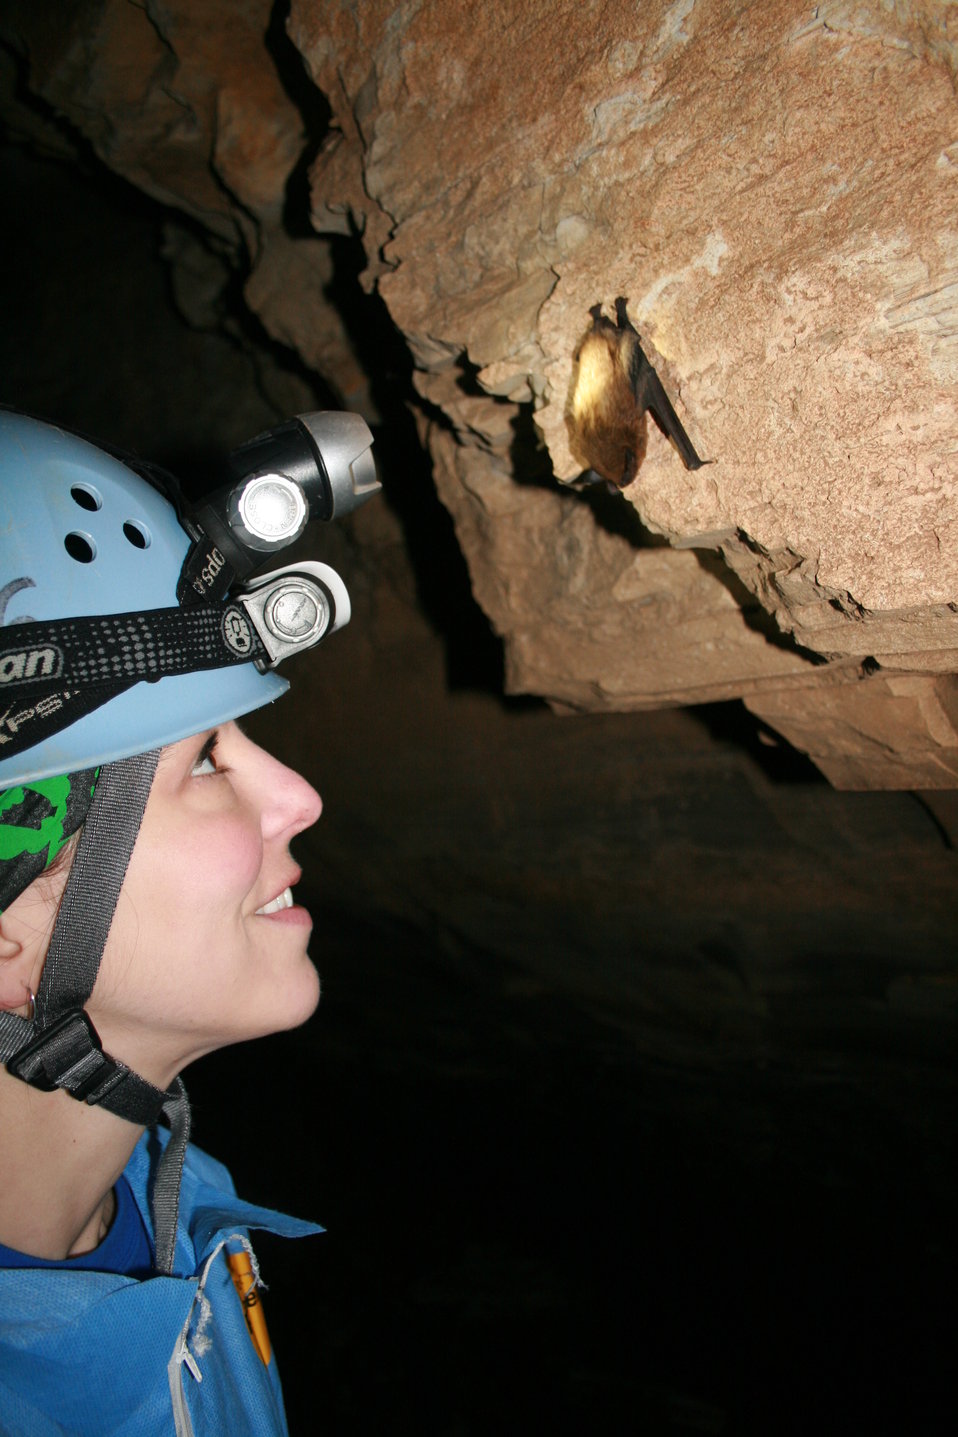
USFWS staff inspects bat

USFWS staff Ann Froschauer inspects healthy big brown bat (Eptesicus fuscus)